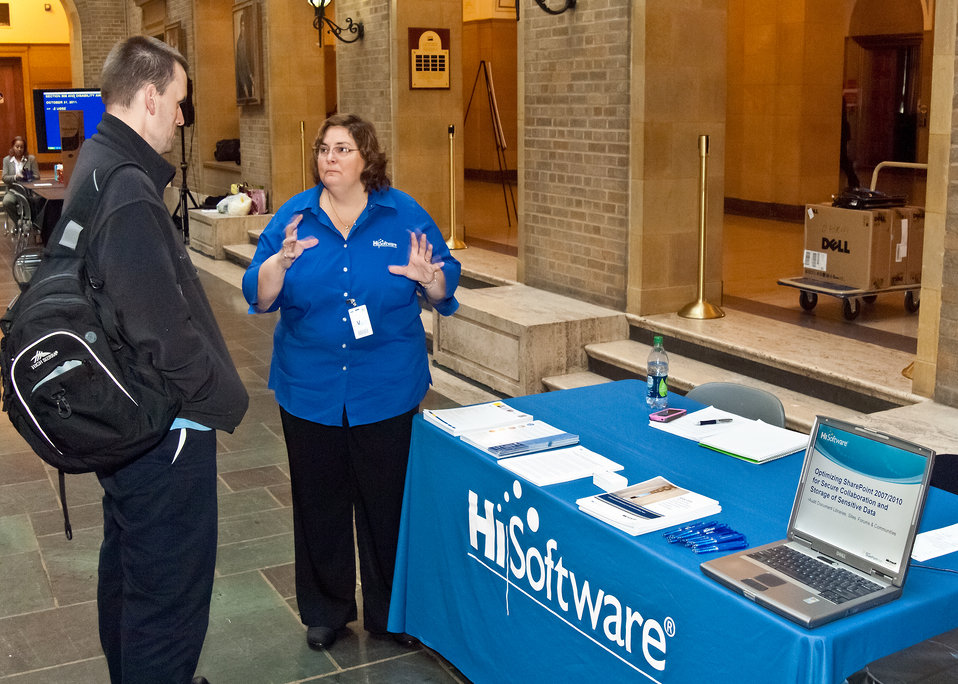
Agricultural Research Service employee John Reese (left) listens to HiSoftware representative Laura Turgeon (right) explain how HiSoftware scans web content for accessibility and privacy in compliance with Section 508 at the U. S. Department of Agriculture (USDA) Section 508 and Disability Awareness Program in Washington, DC, on Monday, Oct. 31, 2011. Sponsored by the Office of the Chief Information Officer, the theme of the event was, “Turning the Key to Unlock and Eliminate Barriers by Providing Accessibility to All.” Section 508 applies to the development, procurement, maintenance or use of electronic and information technology allowing accessibility and awareness to promote inclusiveness to employees and the public with disabilities to information technology managed by the Federal government. Section 508 is part of the USDA’s Cultural Transformation Initiative to hire more employees with disabilities.